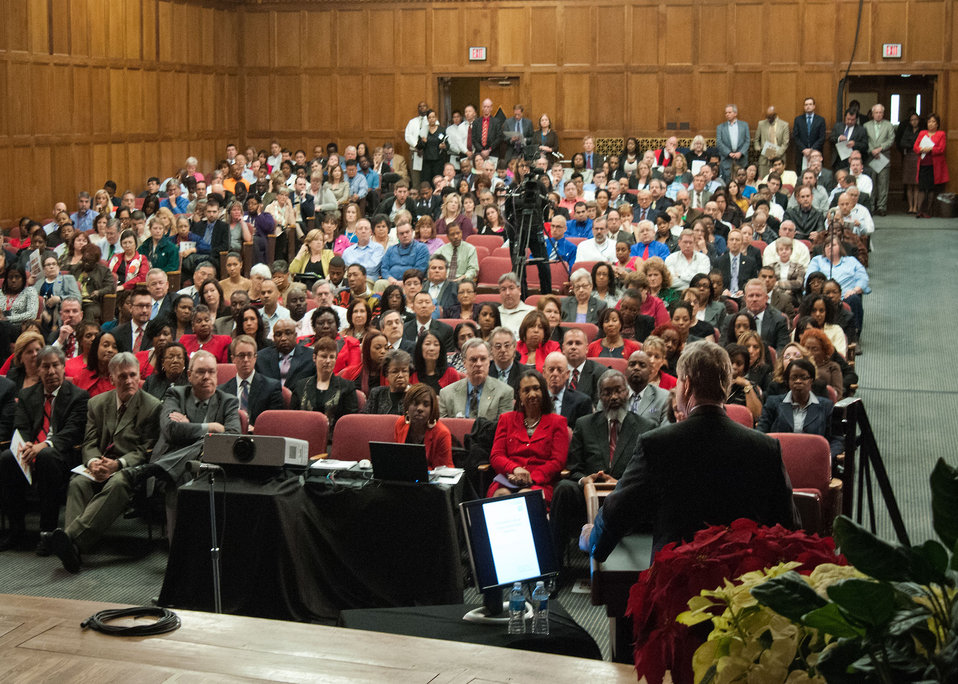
Agriculture Secretary Tom Vilsack addresses employees at the U.S. Department of Agriculture’s (USDA) Fourth Annual Cultural Transformation event held in Washington, D.C. on Tuesday, Dec. 4, 2012. The theme for the event “Faces of Cultural Transformation” Focusing on changing the way we serve our customers and cultural transformation’s benefits to employees. Secretary Vilsack spoke of the progress made during his administration’s tenure at the department and how USDA is cited as a positive example of cultural transformation in the workplace.